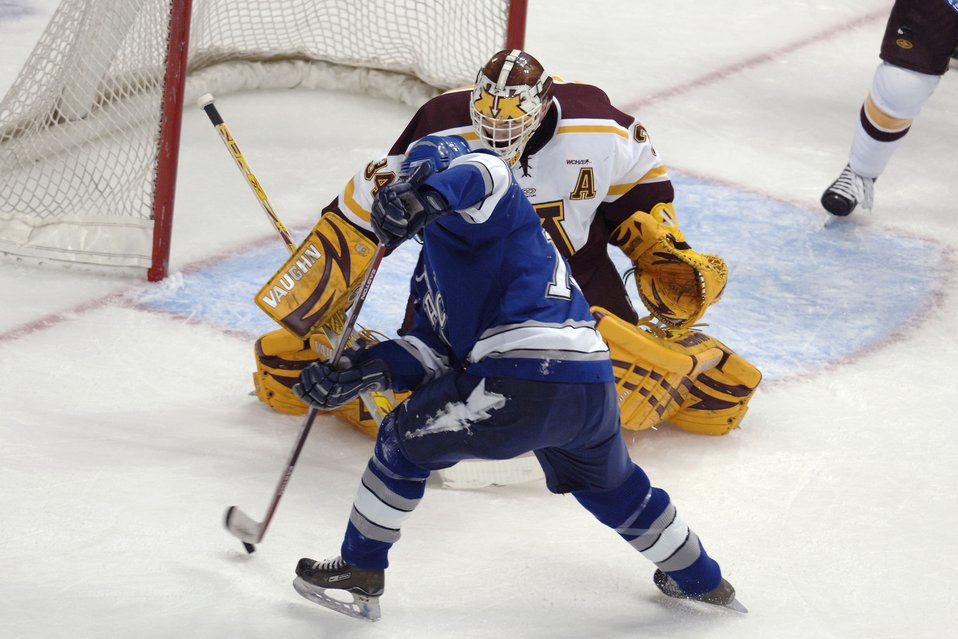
Gophers ground Falcons season during third period rally

Falcon right wing Mike Phillipich goes to his back hand on Minnesota goaltender Kellen Briggs during the NCAA West Regional March 24 at the Pepsj Center in Denver. Phillipich assisted on Andrew Ramsey's go ahead goal, in Air Forces 4-3 loss to the Gophers.